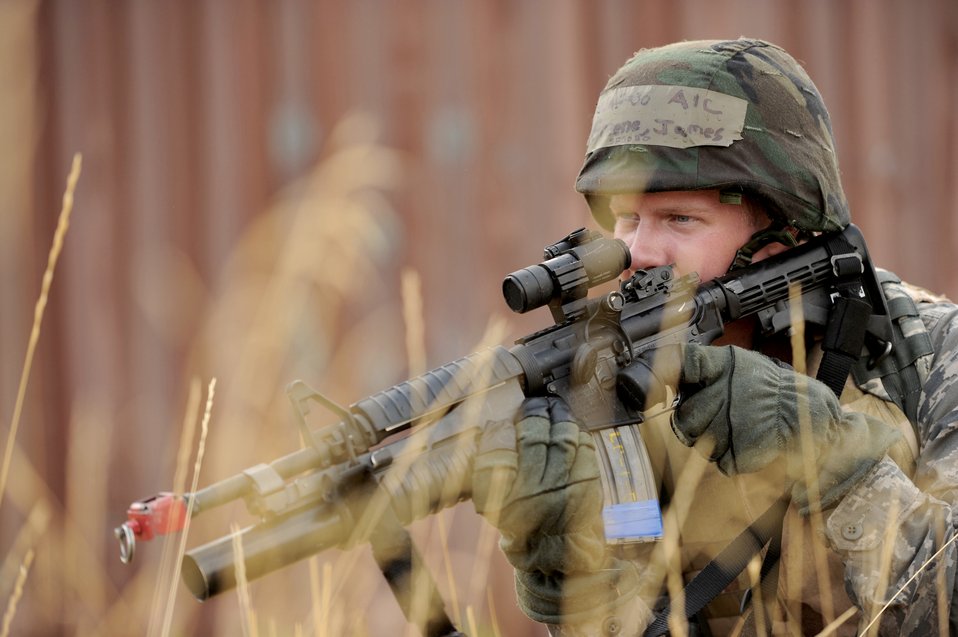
Operational Readiness Exercise 10-4

Airman 1st Class James Greene sets up a perimeter during an exercise Oct. 7, 2010, at Hill Air Force Base, Utah. He is assigned to the 419th Security Forces Squadron.